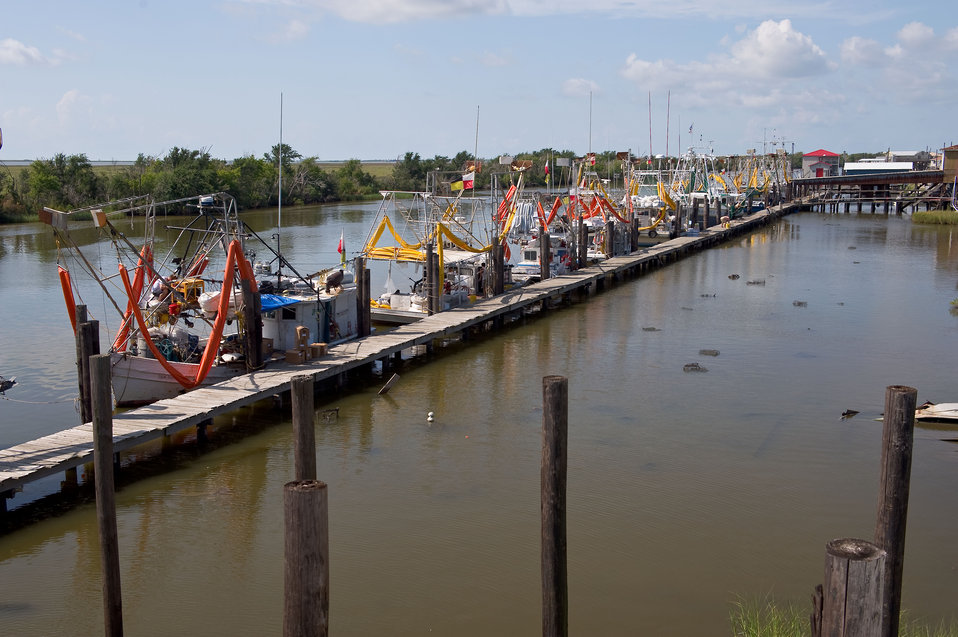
August 6, Shrimp boats, outfitted with oil boom, line the docks near Leeville, La